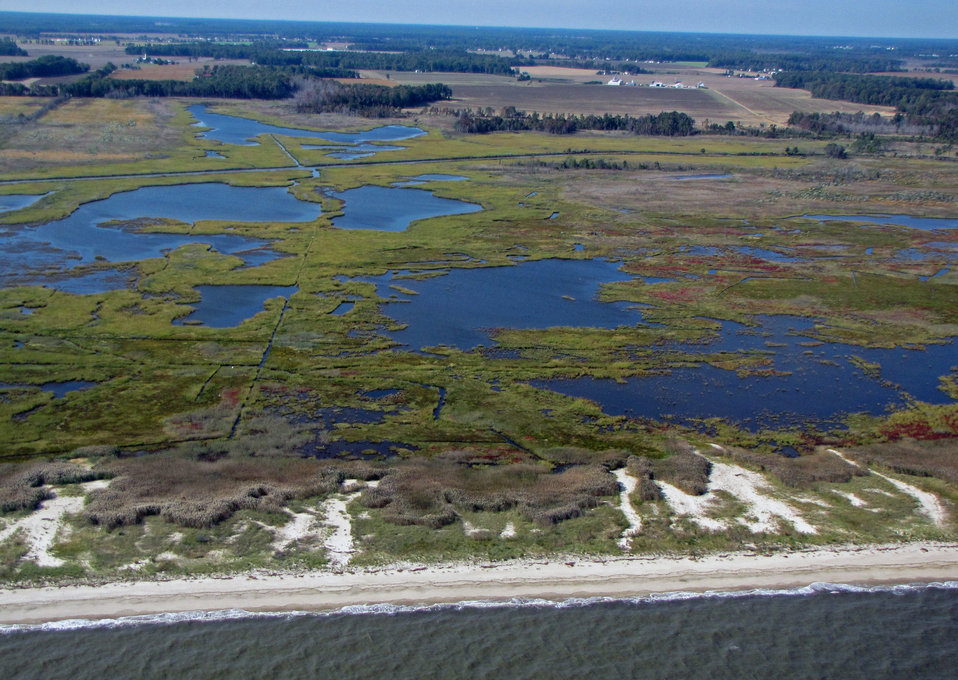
Aerial view of Prime Hook National Wildlife Refuge.